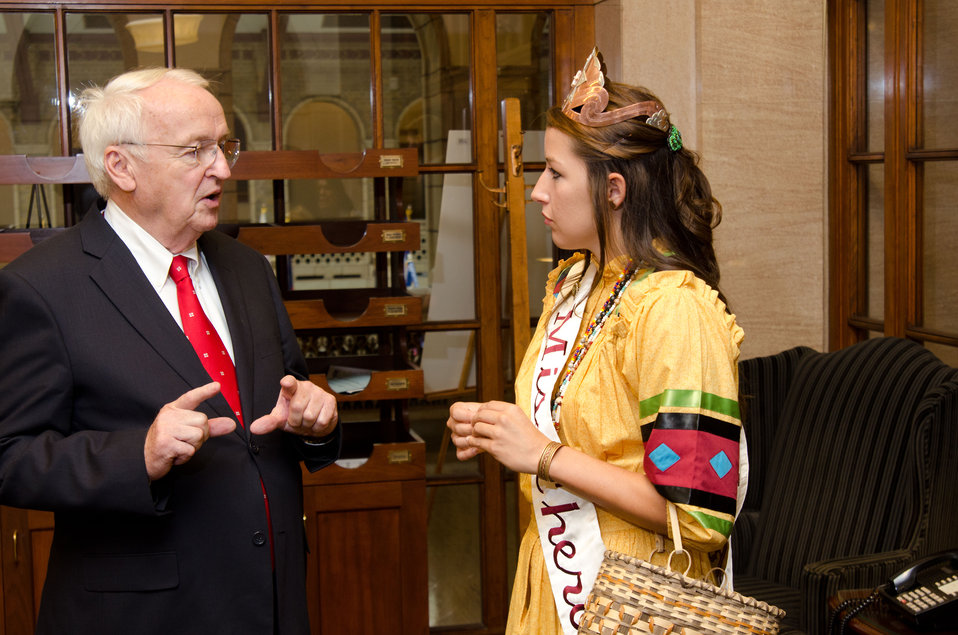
Miss Cherokee 2010-2011 Brooke Hudson (right) and officers of the Cherokee nation met with U.S. Department of Agriculture Under Secretary for Food, Nutrition and Consumer Services Kevin Concannon (left) in Washington, DC, on Tuesday, August 9, 2011.